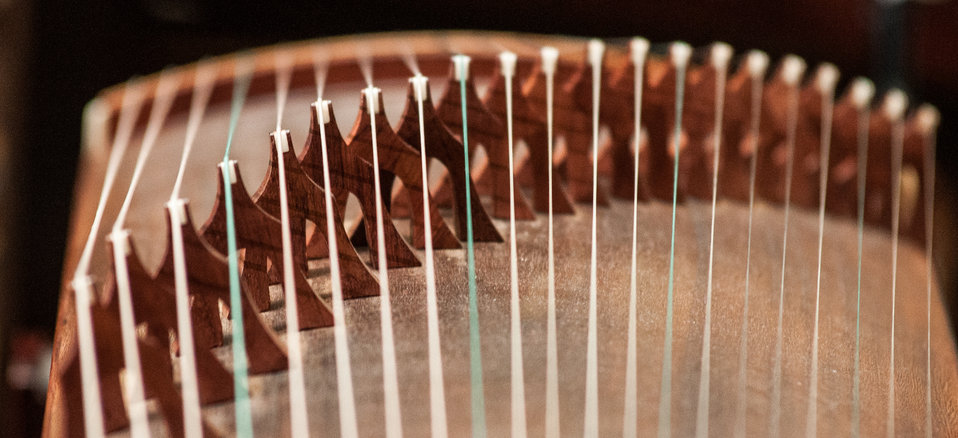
Washington Chinese Traditional Orchestra’s Huilan Chen gives a solo performance of “Gao Shan Liu shui” and “Yi zu Wu qu” on the Guzheng, an ancient type of musical instrument, during the U.S. Department of Agriculture (USDA) Asian Pacific American Heritage Month Observance, at the USDA headquarters, Whitten Building patio, in Washington, D.C., on Thursday, May 23, 2013. This year’s theme is “Building leadership; Embracing the Cultural Values and Inclusions.”